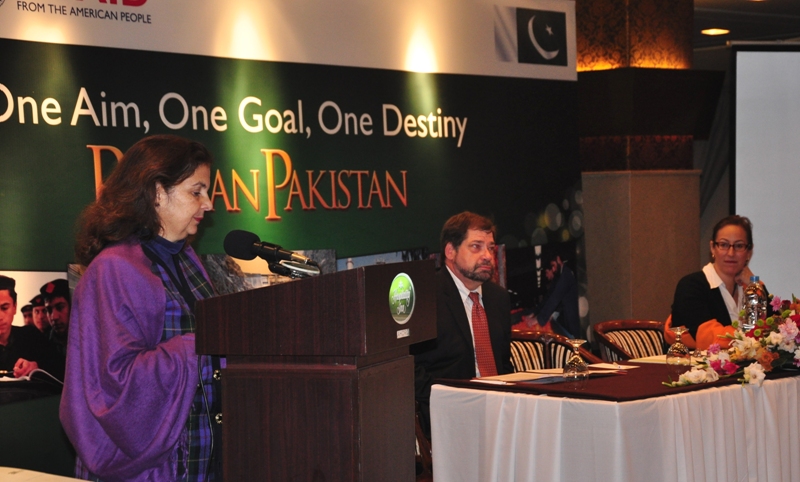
Education Workshop 138